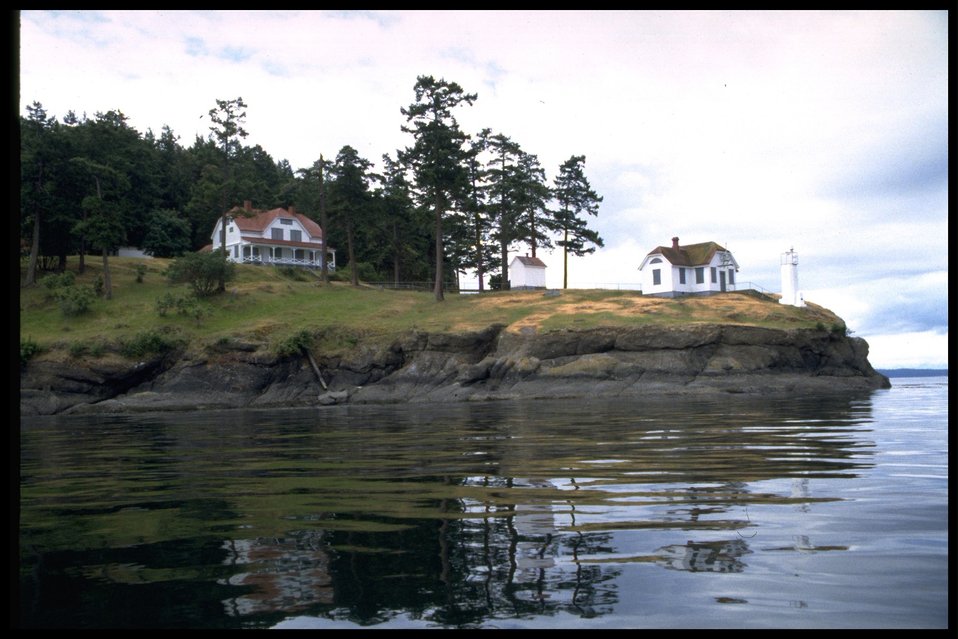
Turn Point from water with light station and buildings. Series of 17 photos.